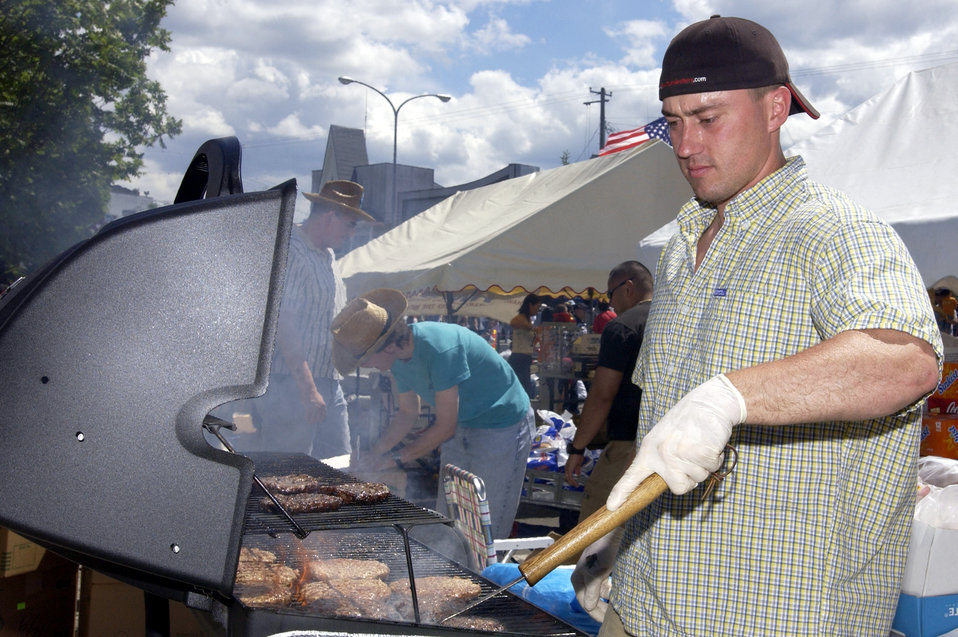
Learning about America

MISAWA CITY, Japan -- Staff Sgt. Daniel Bird cooks burgers in a food booth at the 16th annual American Day celebration June 13 outside nearby Misawa Air Base. The event provides opportunities for Japanese people to try real American-style cuisine and learn more about American culture. More than 70,000 people attended this year's event. Sergeant Bird is assigned to the 35th Comptroller Squadron.